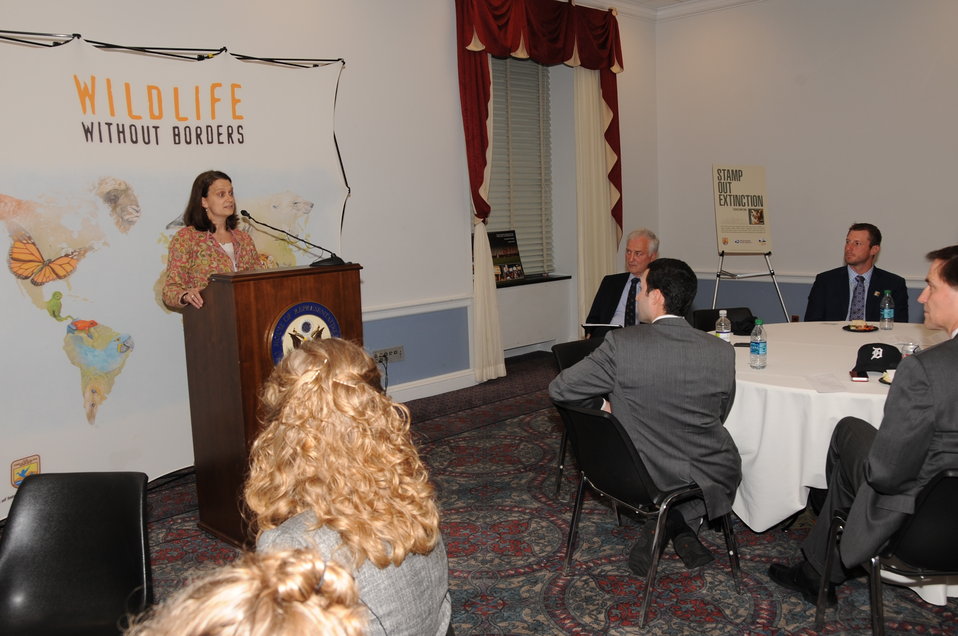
Save Vanishing Species on Capitol Hill

Katie Frohardt, Exec. Director, Flora and Fauna International